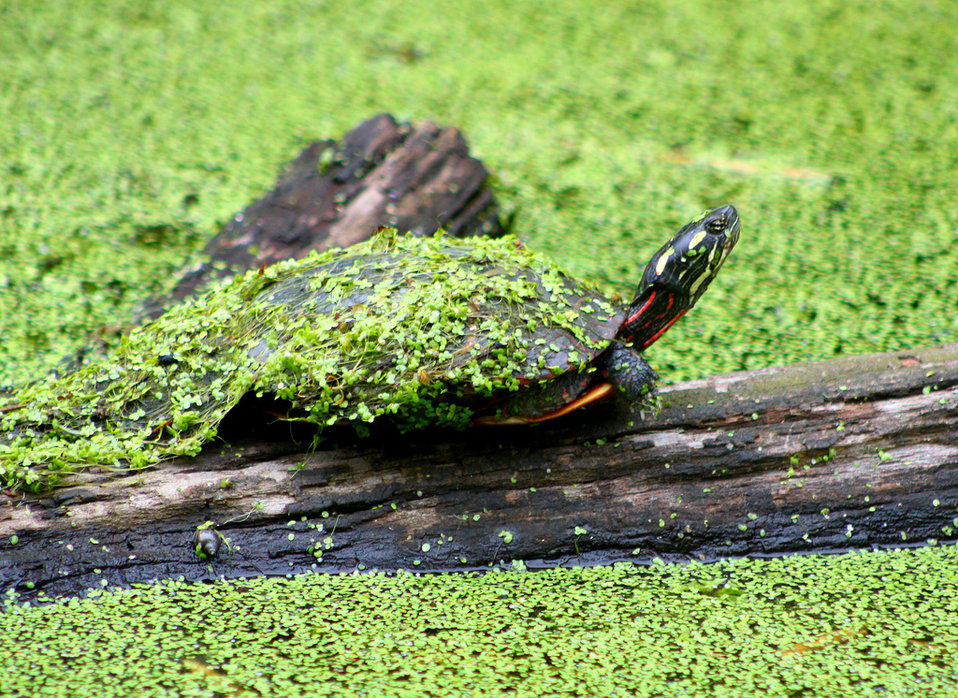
Eastern painted turtle

John Heinz National Wildlife Refuge, PA
May 2011